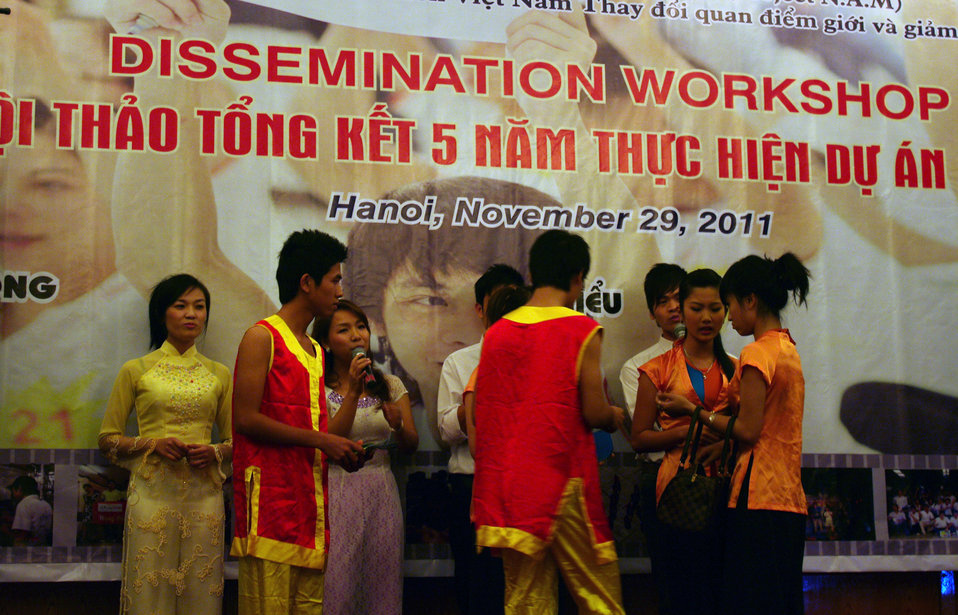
USAID Supports HIV Awareness among Street Youth and Young Men

Trainers and peer educators tell their stories on November 29, 2011, in Hanoi, Vietnam